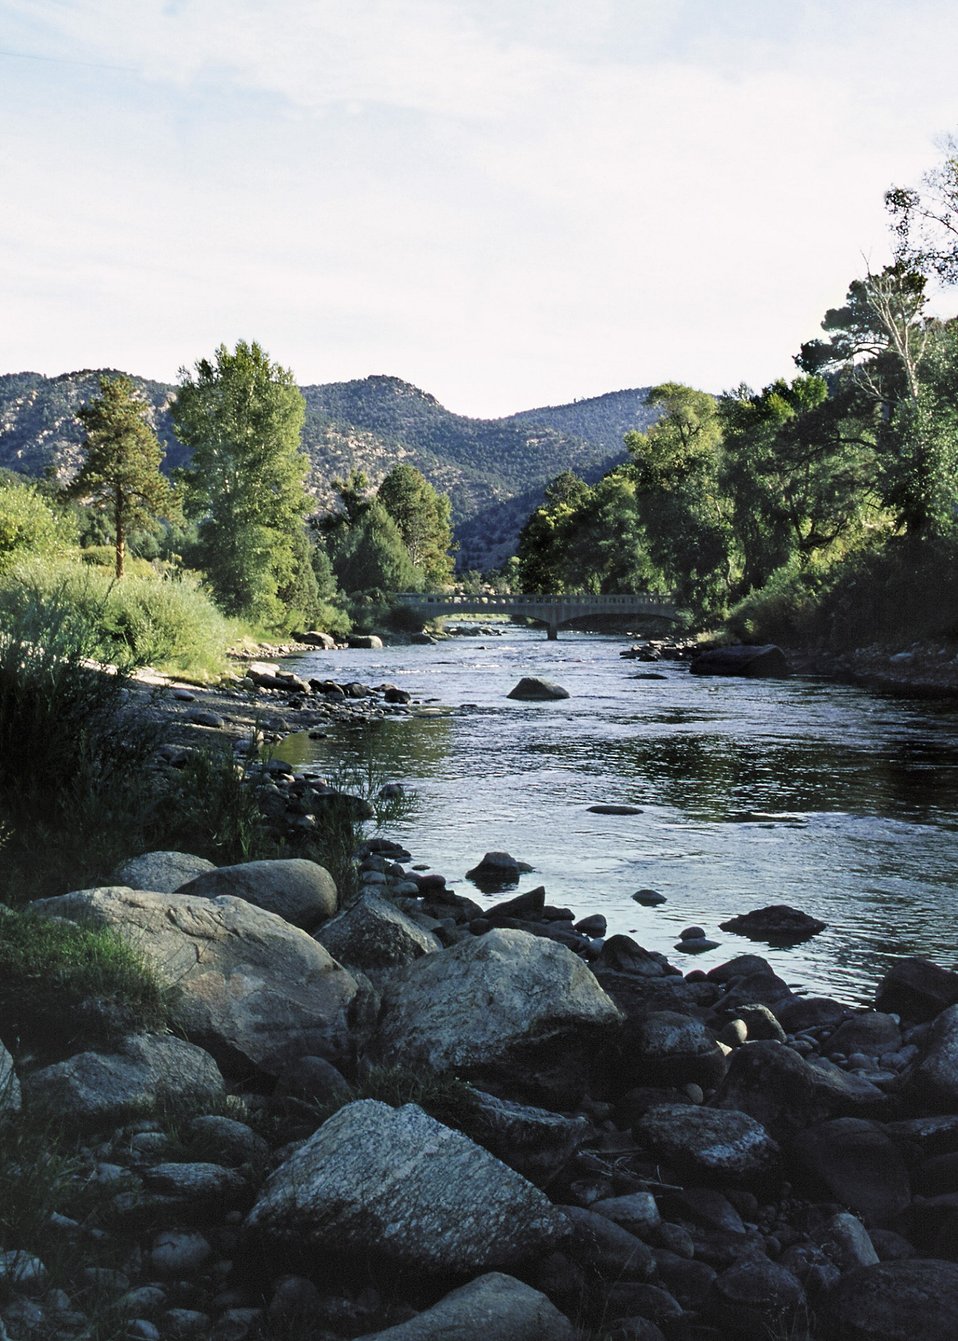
Arkansas River